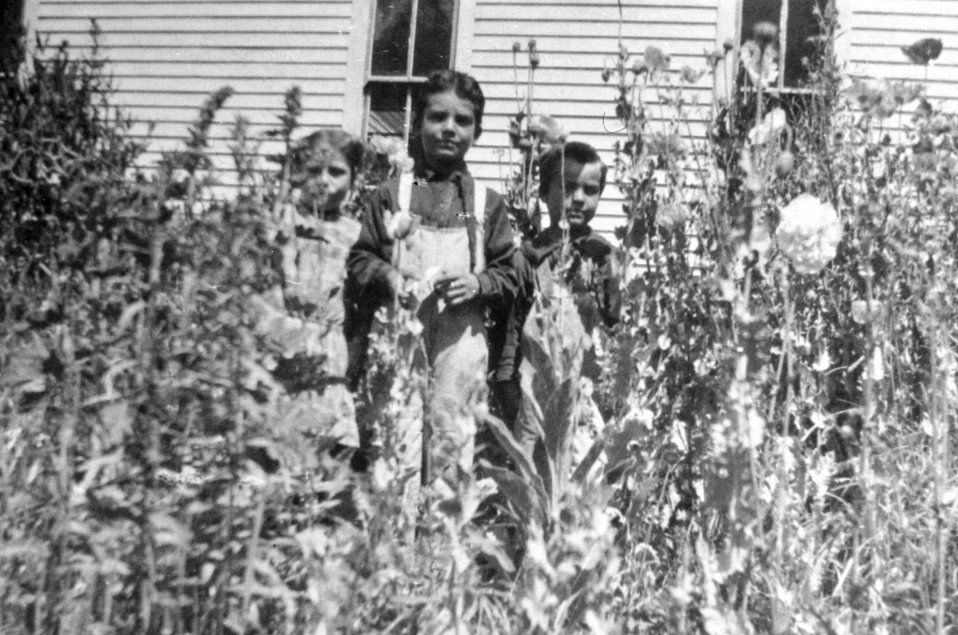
Alpine, Ivin Evered, Billlings at Mule Creek.